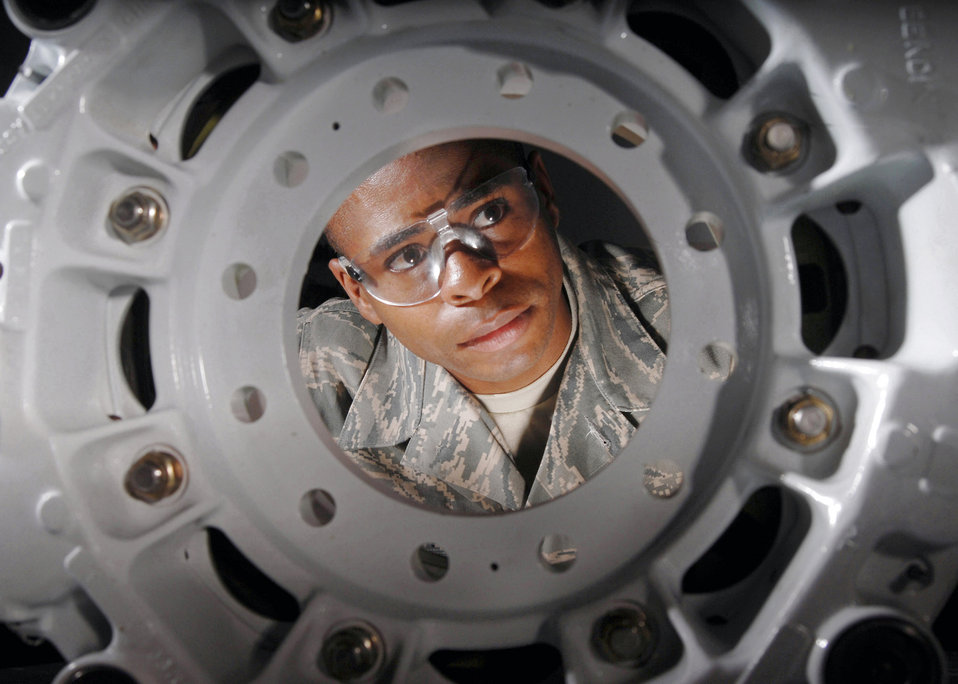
Tighten up

Tech. Sgt. Alan L. Scott visually inspects a KC-135 Stratotanker refueling aircraft brake assembly July 30 at March Air Reserve Base, Calif. March ARB, located in Southern California, is home to the largest air mobility wing in the Air Force Reserve Command. It is also home to units from the Army Reserve, Navy Reserve, Marine Corps Reserve and Air National Guard. Sergeant Scott is a pneudraulics technician from the 452nd Maintenance Squadron.